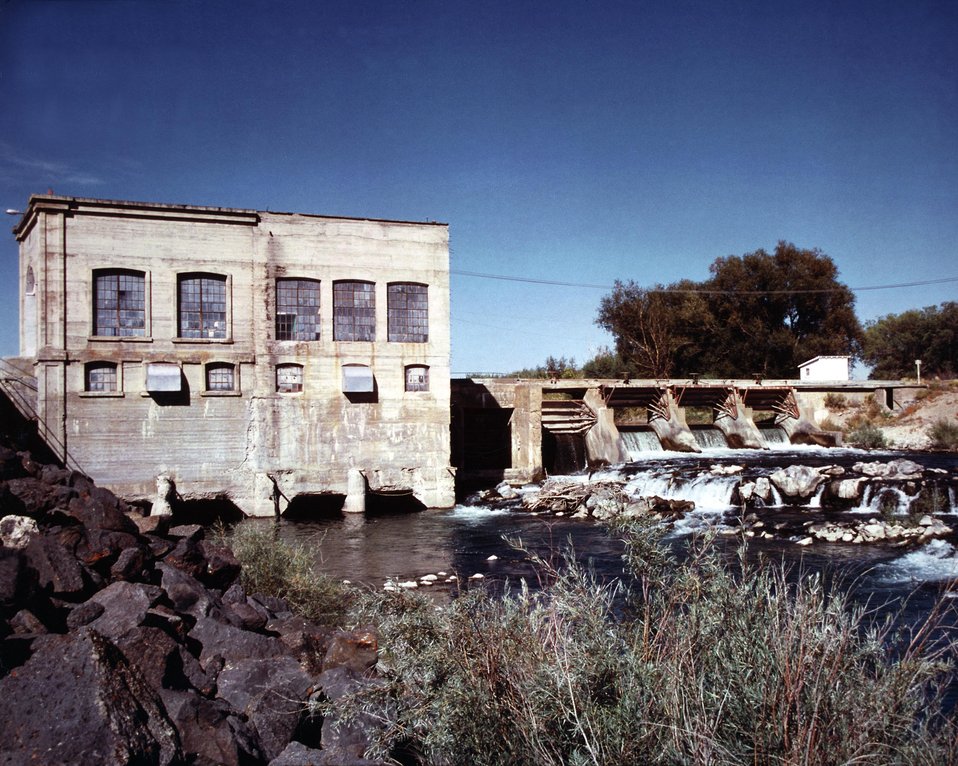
EXISTING UPPER DAM TO BE DEMOLISHED.

THE DEMONSTRATION PROJECT AT IDAHO FALLS CONSISTS OF REDEVELOPING THE CITY'S THREE EXISTING POWER PLANT SITES. THESE THREE SITES, ALONG THE SNAKE RIVER, ARE GOING TO CONTAIN LOW-HEAD HYDROELECTRIC PLANTS. A 7.2 MWE BULB TURBINE-GENERATOR WILL BE INSTALLED ON EACH SITE. ONE SITE WILL ALSO MAINTAIN TWO EXISTING 1.875 MWE UNITS AS STANDBY OR PEAK FLOW UNITS. PRIOR TO THIS PROJECT, BULB TURBINES HAD ONLY BEEN USED FOR HIGH POWER GENERATION. THIS PROJECT IS GOING TO DEMONSTRATE THAT BULB TURBINES CAN BE USED ECONOMICALLY FOR SMALL-SCALE, LOW-HEAD HYDROELECTRIC POWER GENERATION. THE PROJECT IS ALSO GOING TO DEMONSTRATE THAT THIS TECHNOLOGY CAN BE USED IMMEDIATELY, IT DOES NOT NEED EXTENSIVE RESEARCH AND DEVELOPMENT.